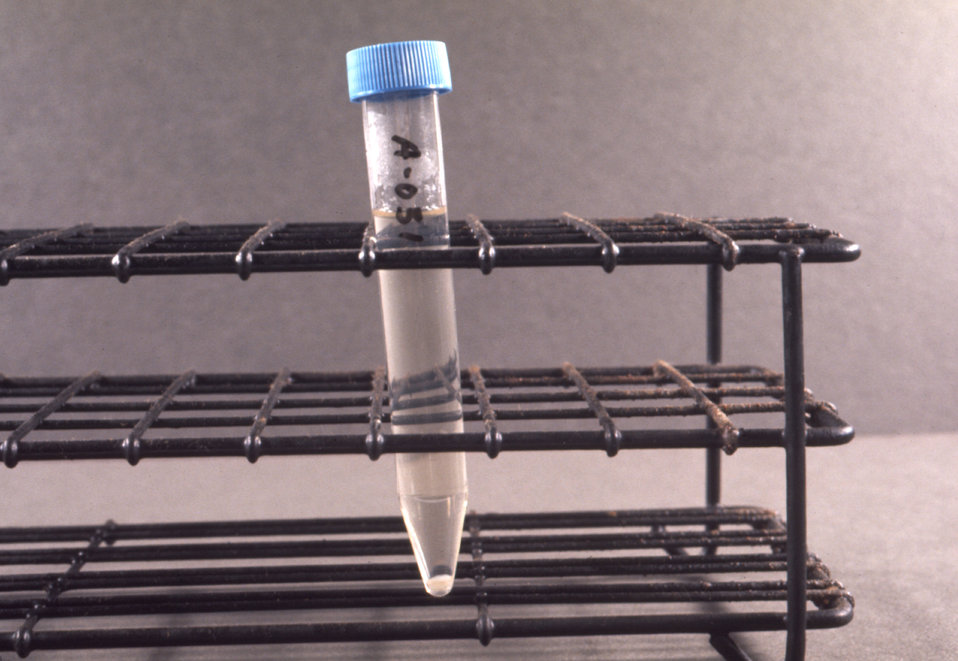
This photograph depicts a 15ml centrifuge tube containing a pellet of amniotic fluid cells.